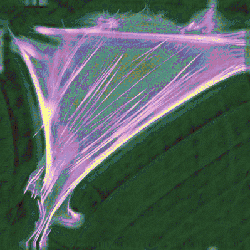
Smooth muscle cells

NIST researchers have genetically engineered smooth muscle cells that can help in evaluating biocompatible materials such as blood vessel stents. This is a colorized image of a fully extended smooth muscle cell.